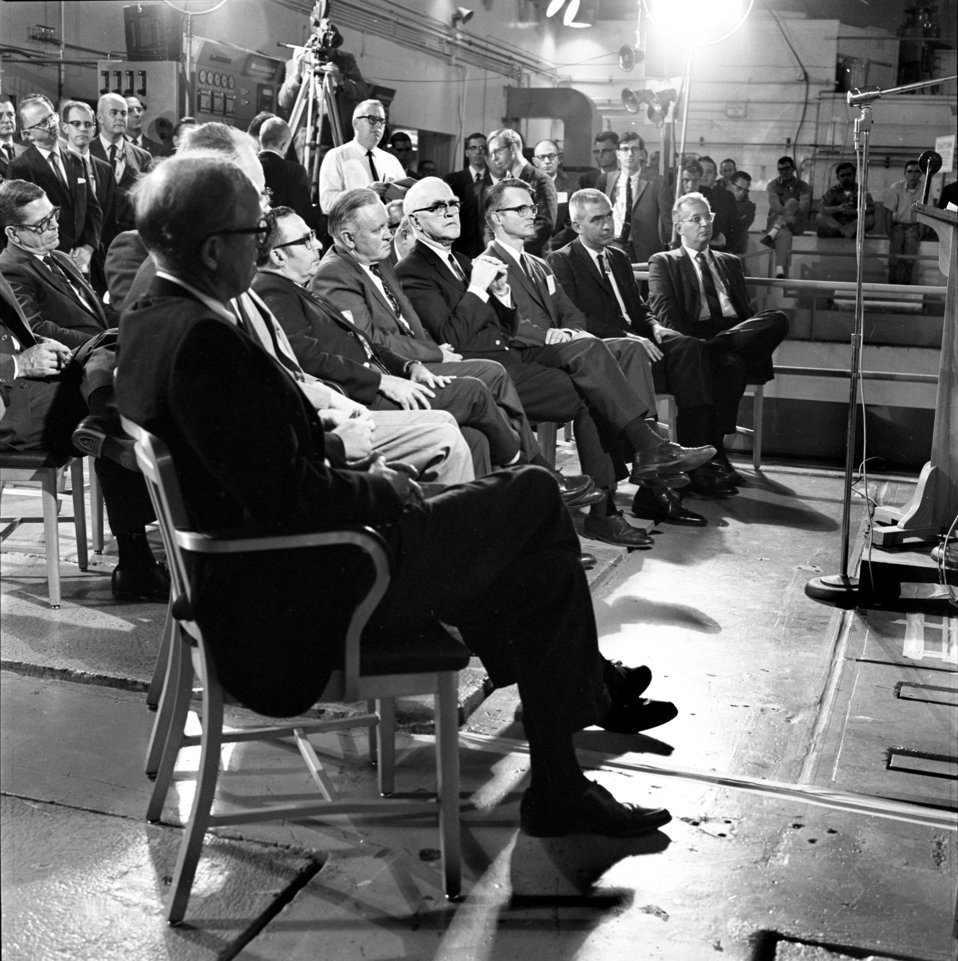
Startup of MSRE with U-233 1968 Oak Ridge

68-510 DOE photo Frank Hoffman 10-10-1968 Molten Salt Reactor began operating with uranium-233 fuel Oak Ridge Tennessee